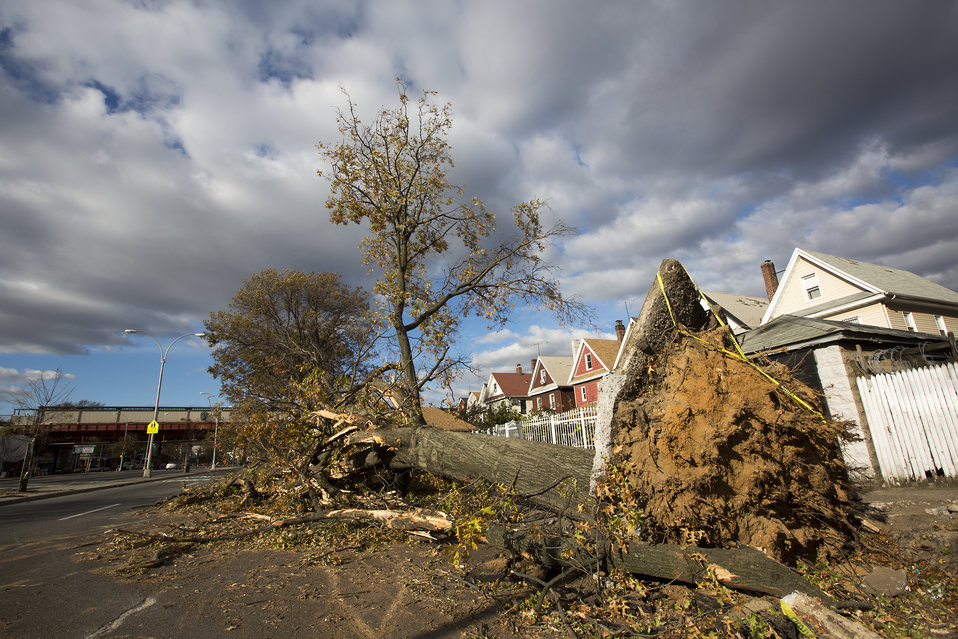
Fallen trees are common throughout New York City and Long Island, NY in wake of Hurricane Sandy on Nov. 4, 2012. New York officials requested support from the U.S. Forest Service through the Federal Emergency Management Agency (FEMA) to assist clearing parks and roads in order to make passage safe for local residents, and emergency vehicles.